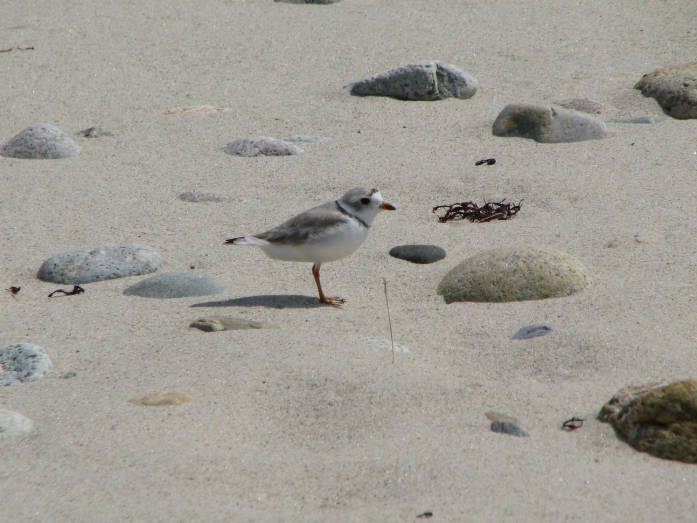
Piping Plover

Sandwich, MA.